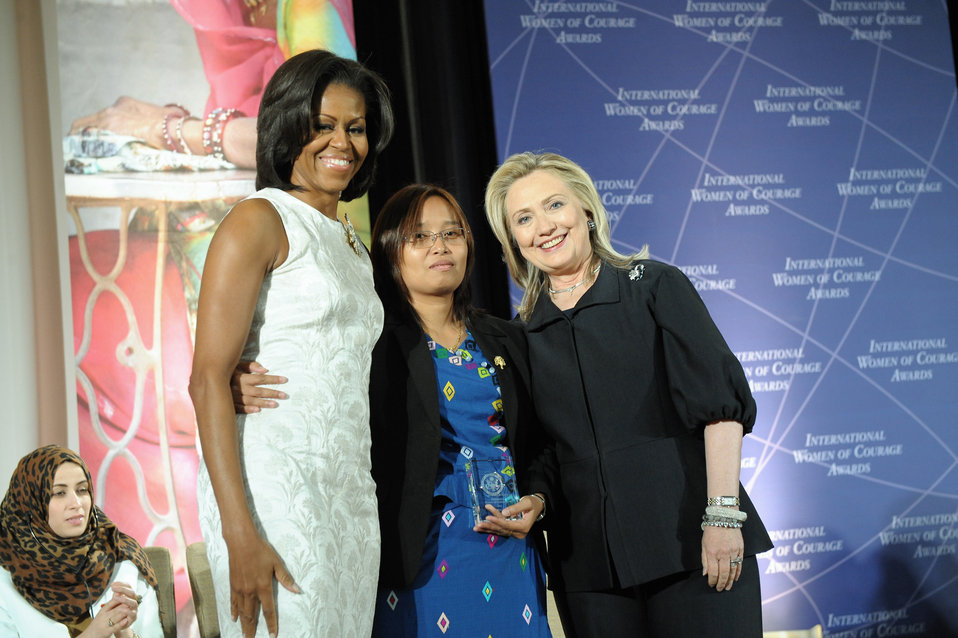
Secretary Clinton and First Lady Obama With 2012 IWOC Award Winner Zin Mar Aung of Burma

U.S. Secretary of State Hillary Rodham Clinton, right; and First Lady Michelle Obama, left; pose for a photo with 2012 International Women of Courage (IWOC) Award Winner Zin Mar Aung of Burma, at the U.S. Department of State in Washington, D.C., on March 8, 2012.